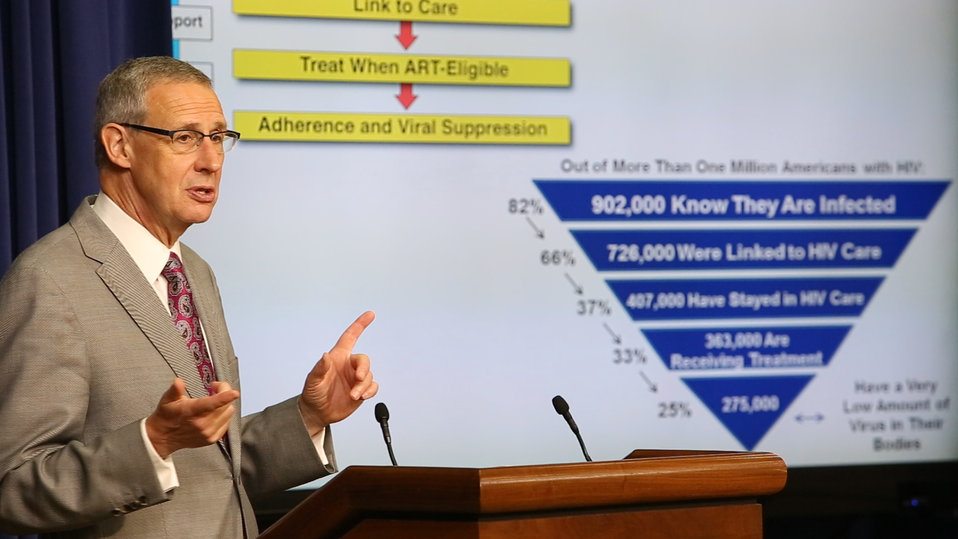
MVI 0180.MOV.Still008